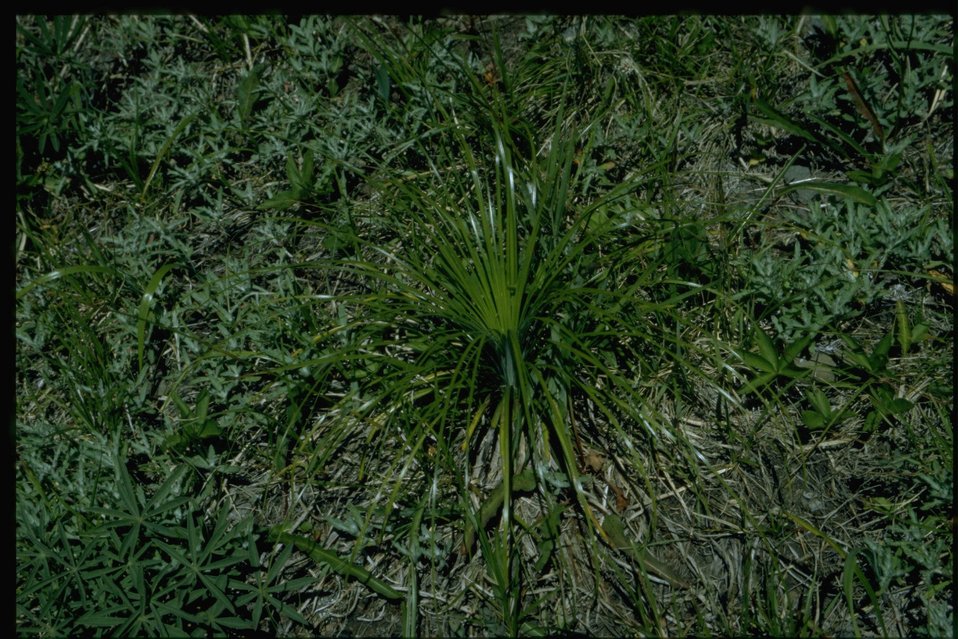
Medium shot of vegetation.